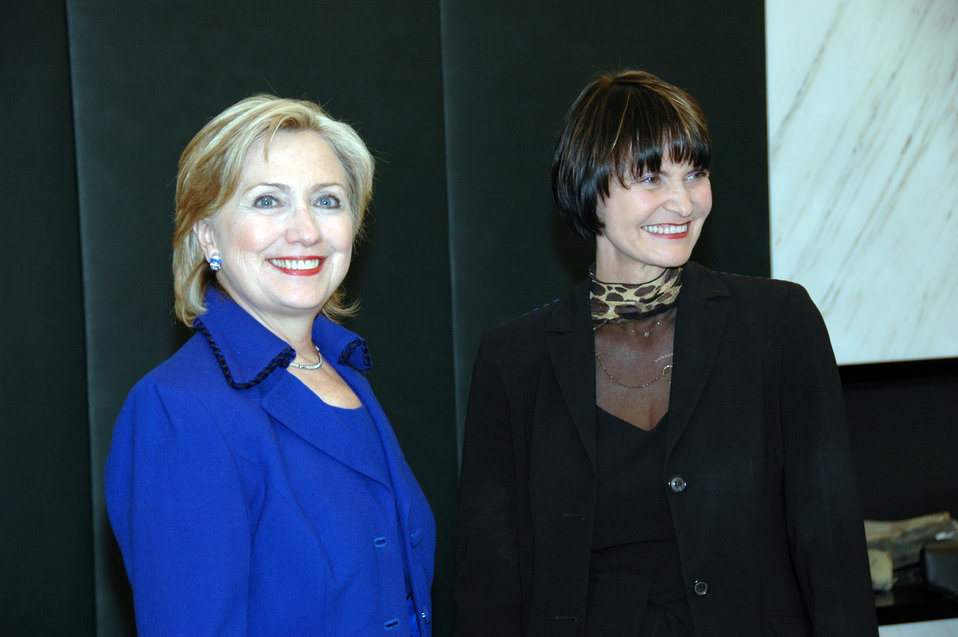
Secretary Clinton Meets Swiss Foreign Minister

U.S. Secretary of State Hillary Rodham Clinton with Swiss Foreign Minister Micheline Calmy-Rey in Zurich, Switzerland October 9, 2009.